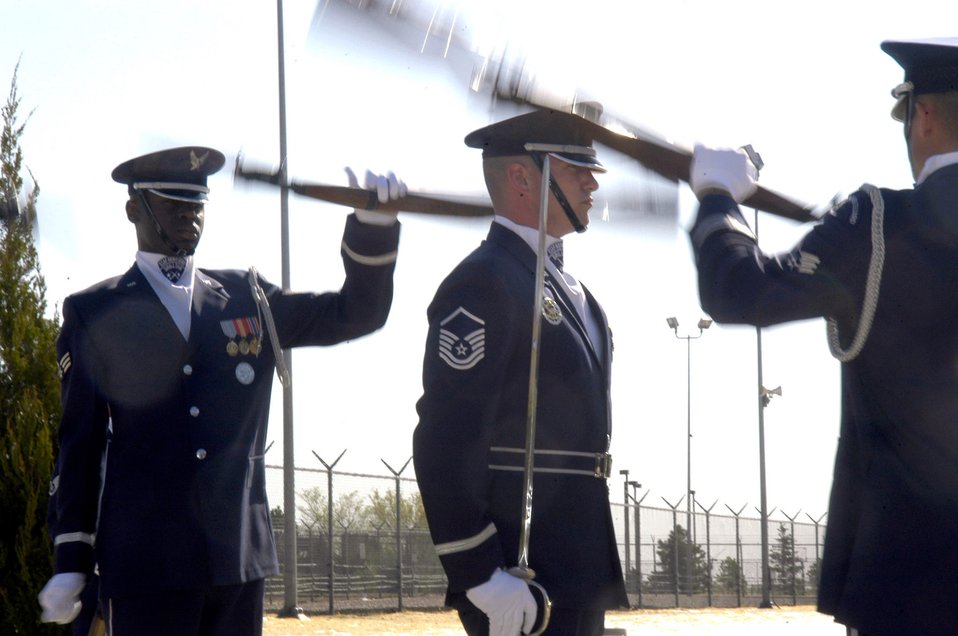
Recruitment

Members of the U.S. Air Force Honor Guard present a drill team demonstration at Schriever Air Force Base, Colo., on Wednesday, May 10, 2006. The Air Force Honor Guard based at Bolling AFB, Md., visited Schriever to recruit Airmen for the team.